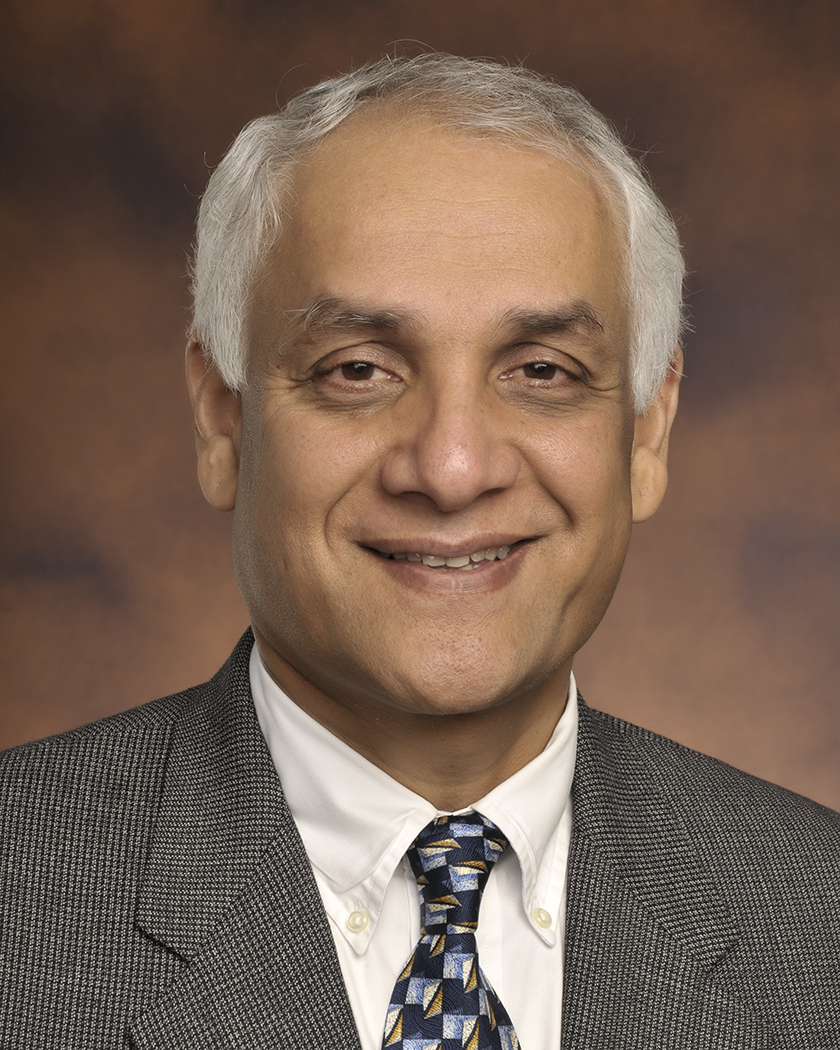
ARPA-E Deputy Director for Technology Pramod Khargonekar